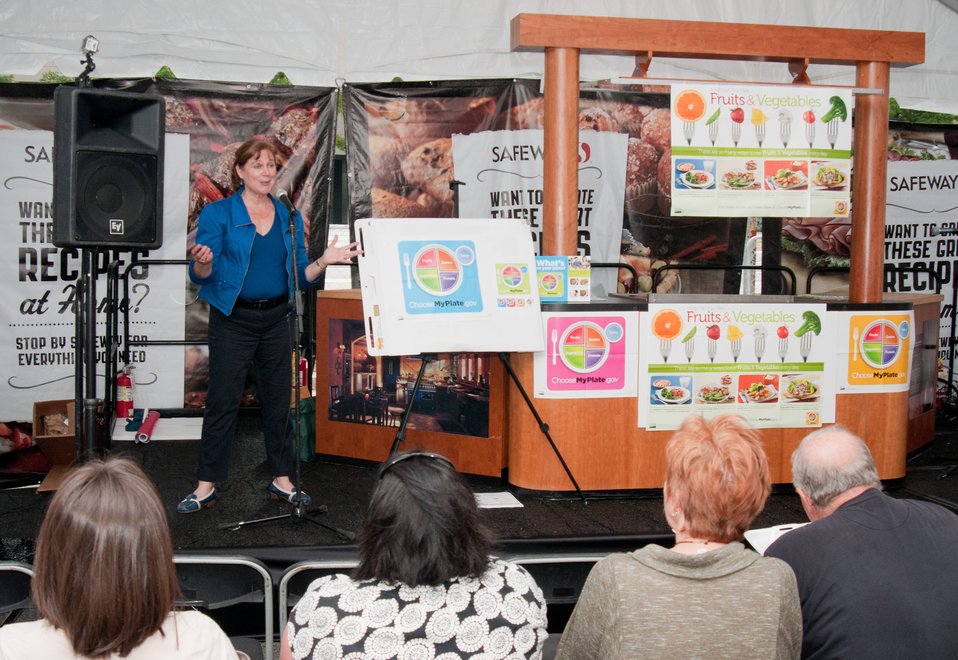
Elaine McLaughlin talks about “My Plate” and many ways people can access nutrition information and how the information can help them live healthier lives, during her presentation at the Taste of D.C., event that highlights more than 70 eateries, 30 specialty beer providers, the United Service Organization (USO) Metropolitan Washington, and live bands. It is anticipated that more than 500,000 people will attend over the course of the three-day event, which extends from the White House to the Capitol, along Pennsylvania Ave. in Washington D.C. on Saturday, October 6, 2012. Agriculture Food Safety and Inspection Service specialists presented additional talks and cooking demonstrations during the event. The Agriculture’s mobile Discovery Zone was on hand to educate children and parents about the four main principals of food safety – clean, separate, cook and chill.